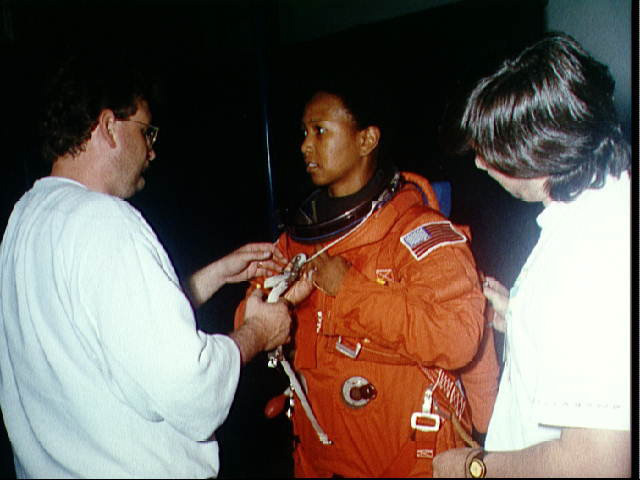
Dr. Mae Jemison was the first African-American woman in space